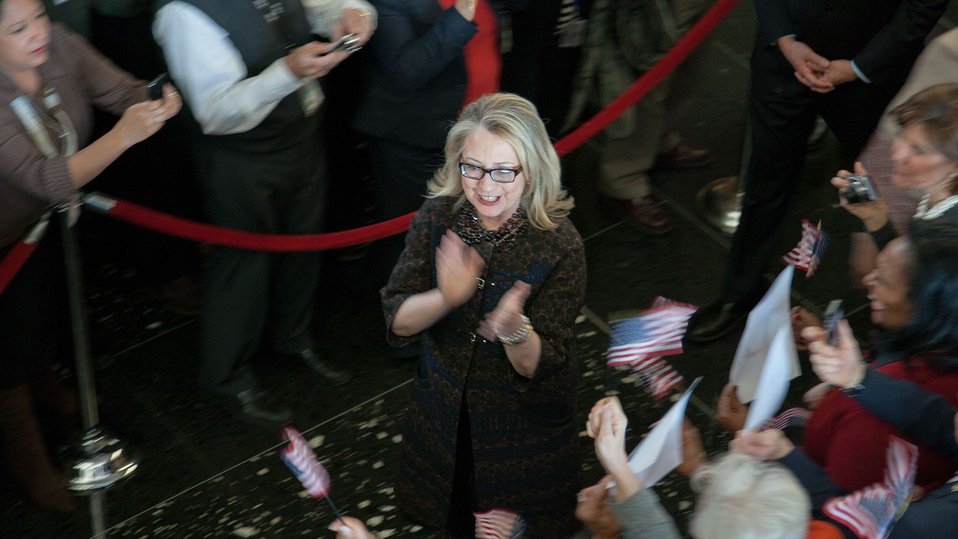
Secretary Clinton Says Farewell

U.S. Secretary of State Hillary Rodham Clinton says farewell to State Department employees at the U.S. Department of State in Washington, D.C., on February 1, 2013.